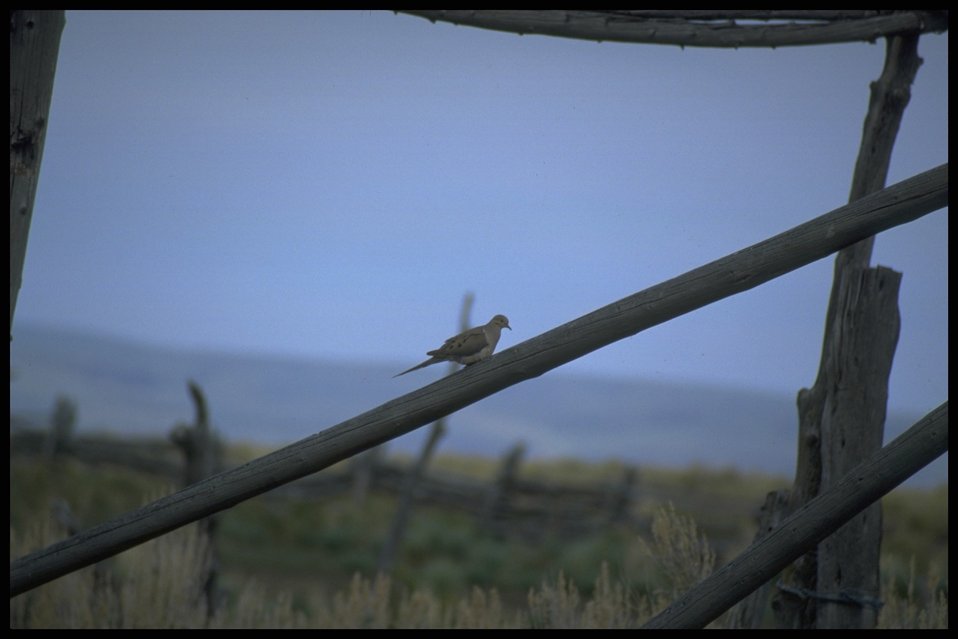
Far shot of Morning Dove, Lakeview District.